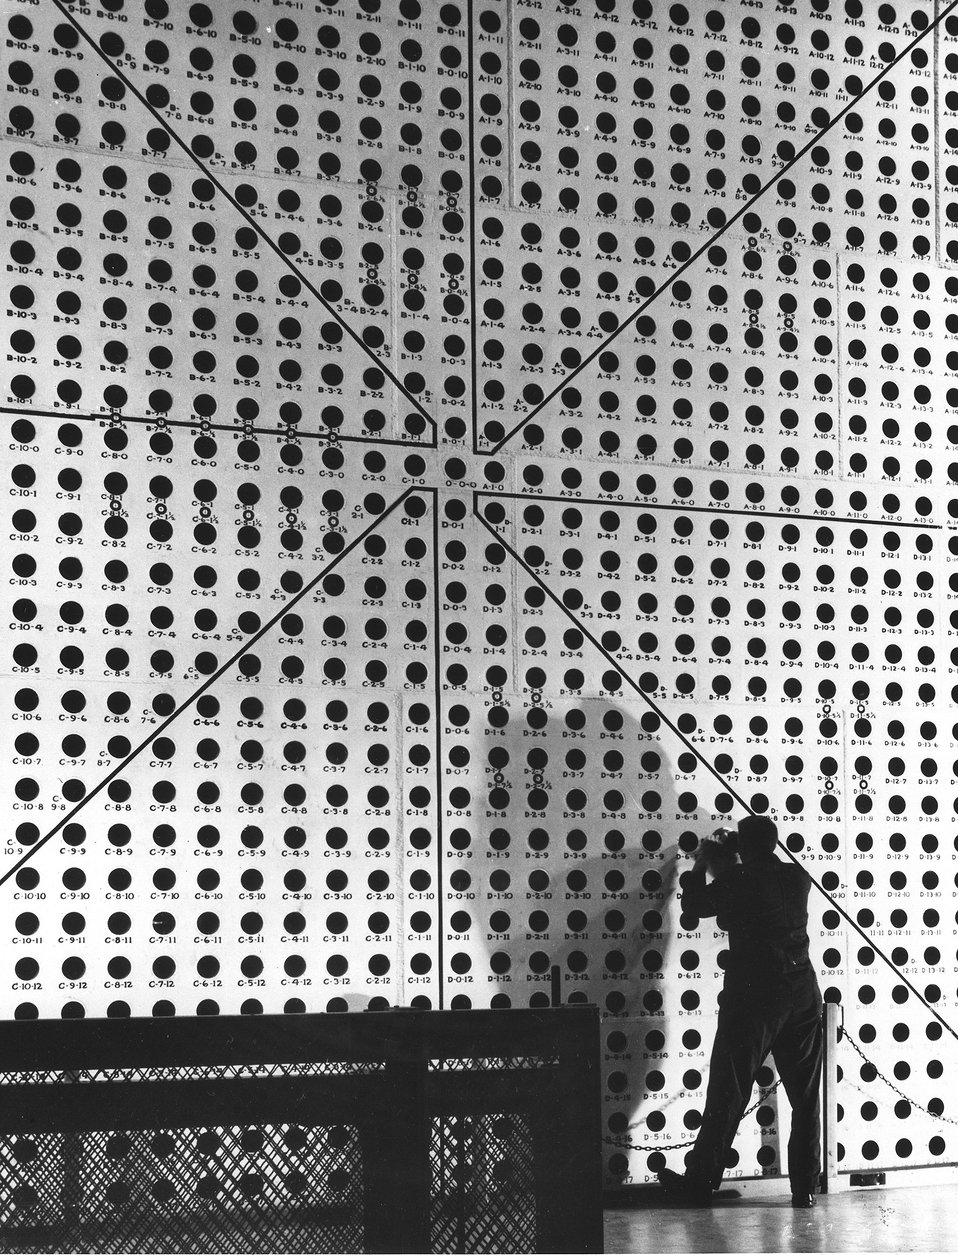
Through these holes in the south face of the Brookhaven reactor are introduced tons of pure uranium metal. c. 1954